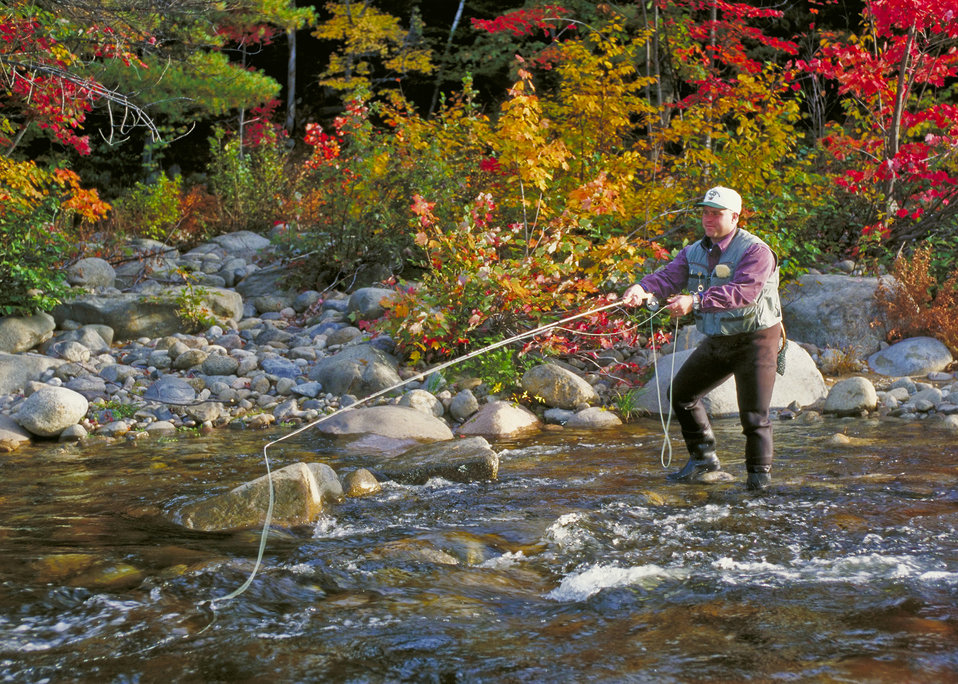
A fly fishing angler in a stream in the White Mountains National Forest in New Hampshire enjoys one of the many popular outdoor recreational activities offered by the United States Department of Agriculture, U. S. Forest Service. The solitude of a forest stream in fall offers relaxation and a kaleidoscope of color.